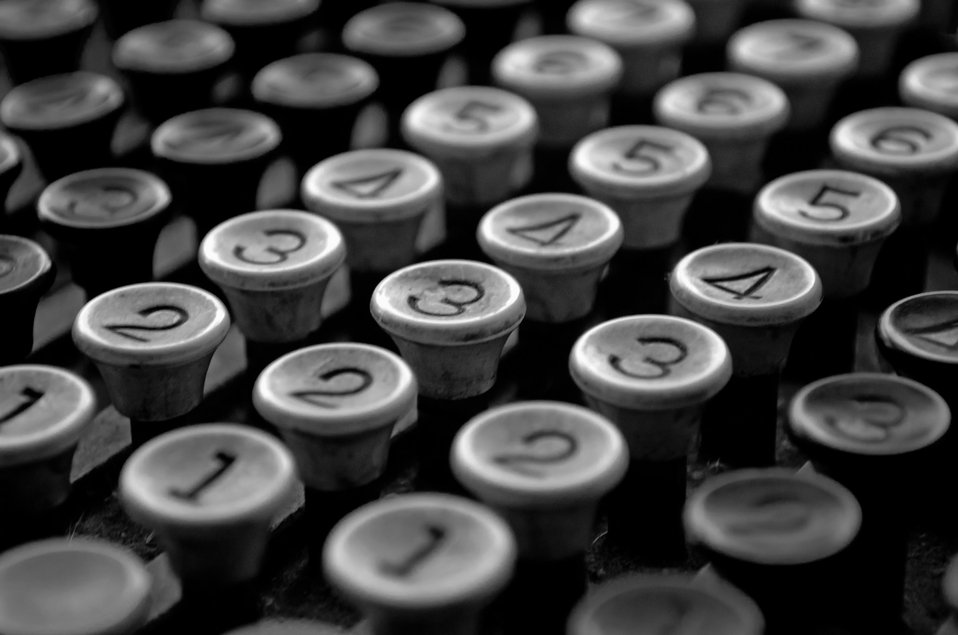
Old calculator.